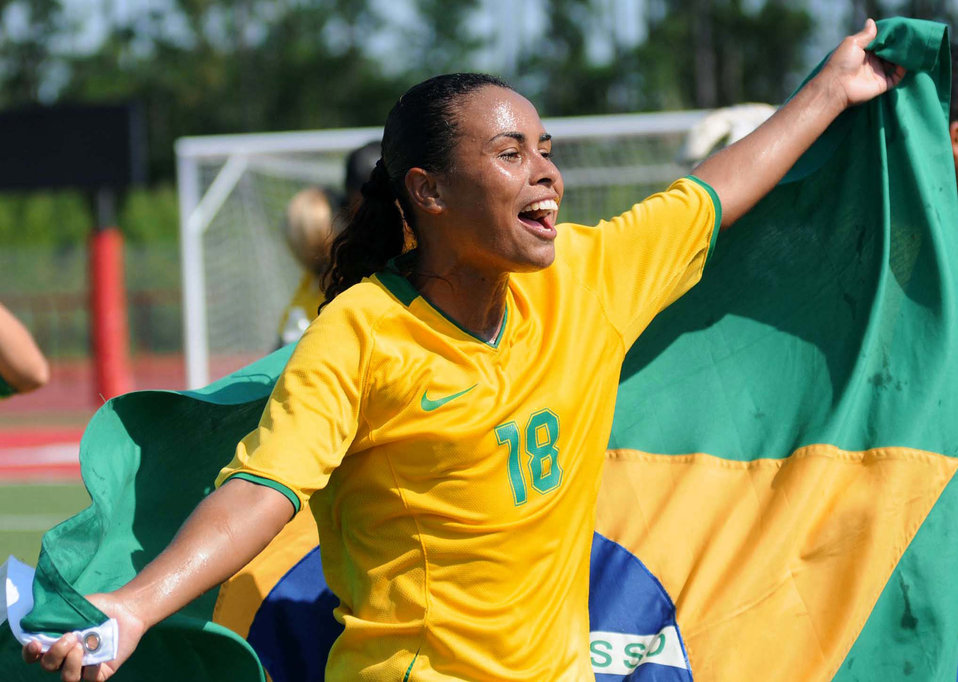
Brazil wins World Military Women's Soccer Championship at Keesler

Ana Paula Silva de Frietas demonstrates her national pride after a 1-0 victory by the Brazilian team over South Korea in the championship game of the 5th Counseil du International Sports Militaire Women's Soccer Championship tournament June 13 at Biloxi High Stadium in Mississippi. Teams from Canada, France, Germany, The Netherlands and the United States also participated in the competition hosted by Keesler Air Force Base that began June 6.